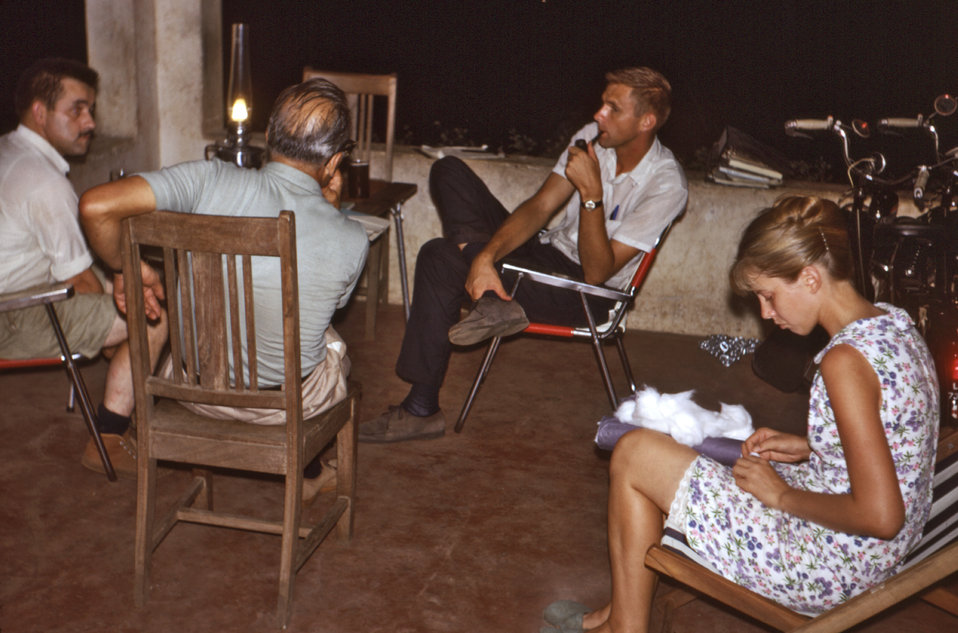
This photograph depicted members of a refugee relief team sent to eastern Nigeria during the Biafran war in 1968; Former CDC Director, William H. Foege, M.D., M.P.H., is shown in the center (with pipe), and nurse Annie Voigt is shown seated at far right.